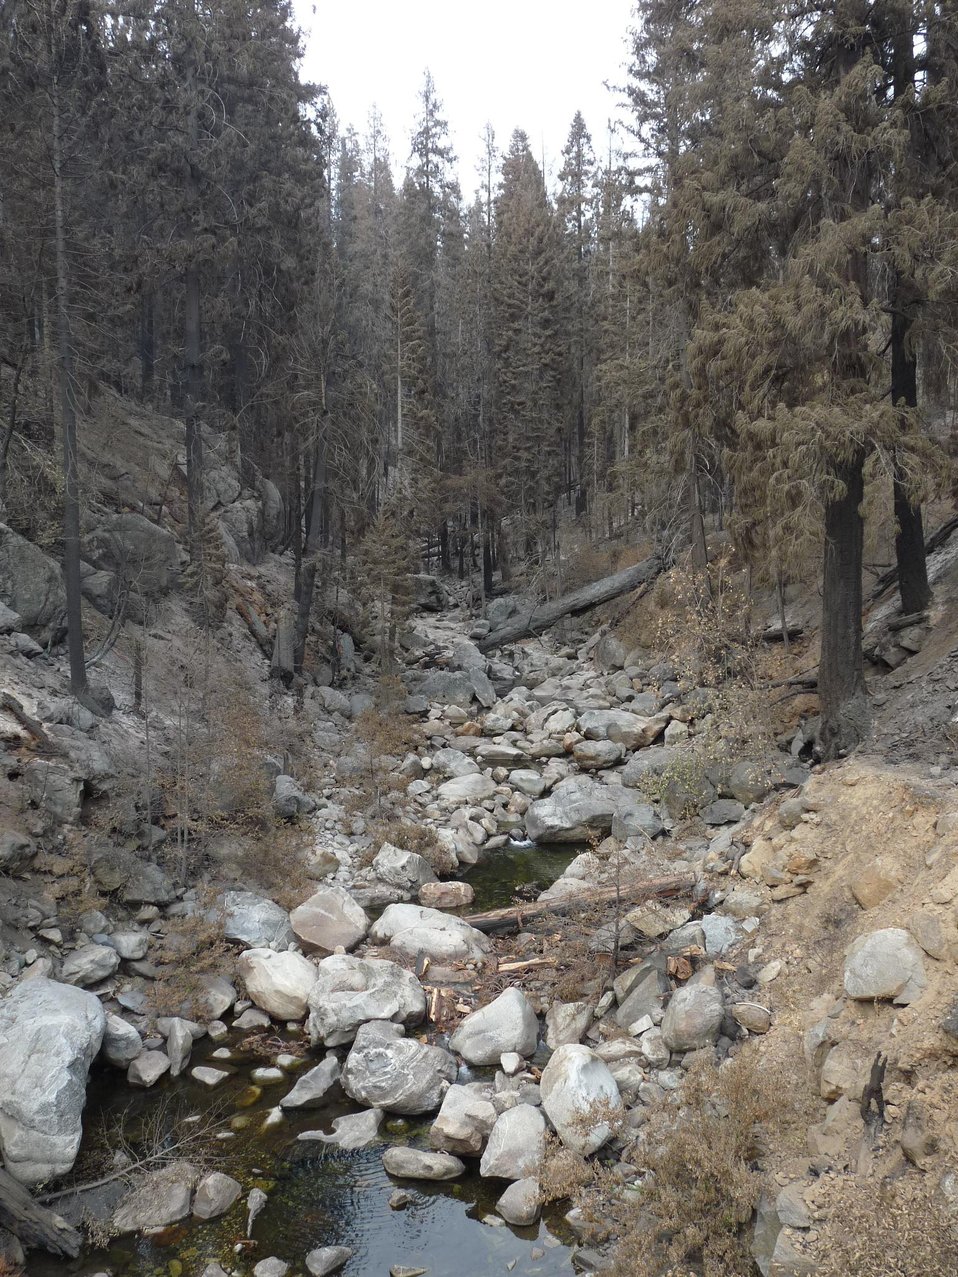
Ash and dead trees impacts the flow along Red Creek at Cottonwood Road Crossing. BAER is a rapid assessment of burned watersheds by a BAER team to identify imminent post-wildfire threats to human life and safety property and critical natural or cultural resources on National Forest System lands and take immediate actions to implement emergency stabilization measures before the first major storms. Fires result in loss of vegetation exposure of soil to erosion and increased water runoff that may lead to flooding increased sediment debris flows and damage to critical natural and cultural resources. BAER team members implement seeding and mulching installation to prevent erosion, erect temporary water run-off control structures that will protect recovering areas, and installation of warning signs, replace safety related facilities, remove safety hazards, prevent permanent loss of habitat for threatened and endangered species, and prevent the spread of noxious weeds and protect critical cultural resources. The Rim Fire in the Stanislaus National Forest near in California began on Aug. 17, 2013 and is under investigation. The fire has consumed approximately 256,169 acres and is 84% contained.